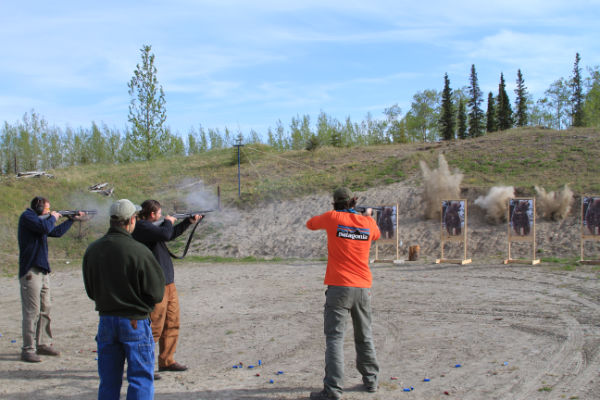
2012-Alaska Region-Work(12)

Alaska Career Discovery Internship Program is partnership with the Student Conservation Association to provide a 12 week internship to college freshman and sophomores to discover careers with the U.S. Fish and Wildlife Service.

Once in Alaska interns convened in Anchorage to acclimatize to the 'Far North' and receive more training including: bear safety, aviation safety, and more.